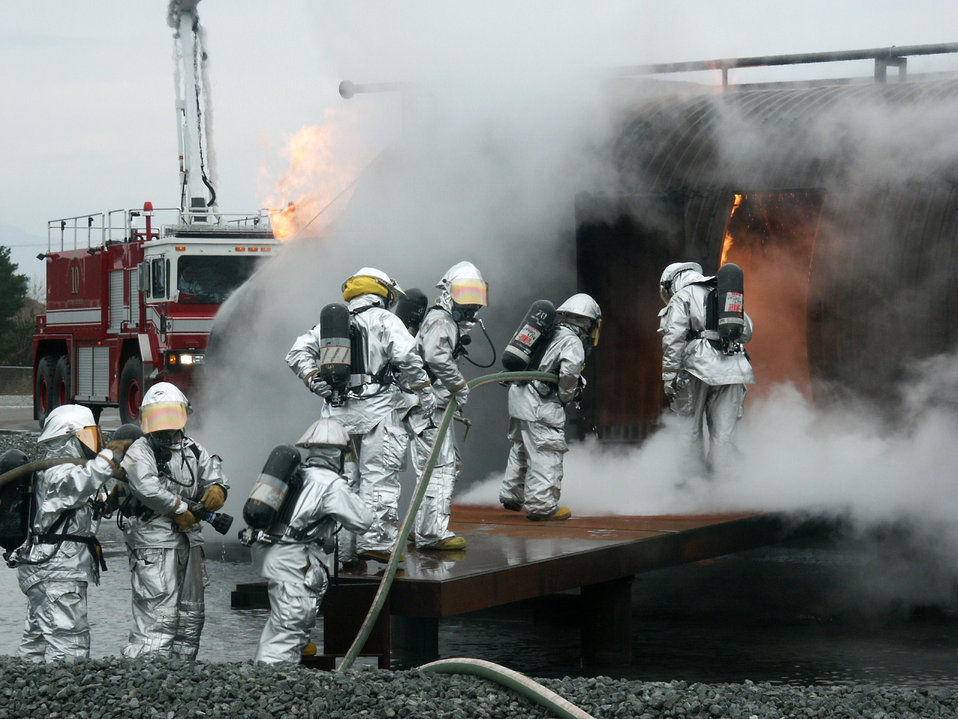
Flaming training

MISAWA AIR BASE, Japan -- American and Japanese firefighters demonstrate how to extinguish an aircraft fire at a fire training facility here Nov. 19. The training was the first to involve firefighters from neighboring Japanese cities. This was also the first time many of the Japanese firefighters had trained with a live fire. The firefighters are assigned to the 35th Civil Engineer Squadron.